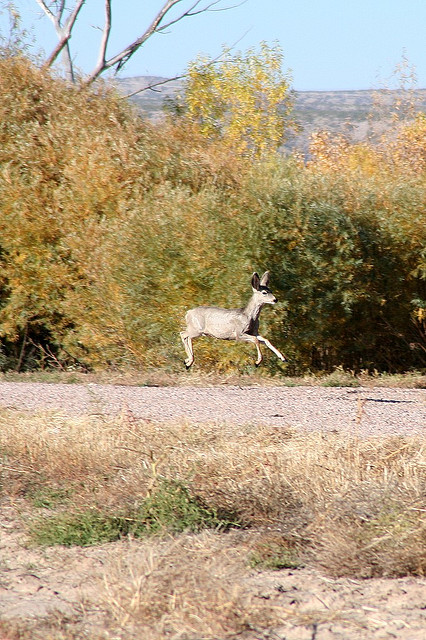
mule deer

Young mule deer
Bosque del Apache National Wildlife Refuge, NM